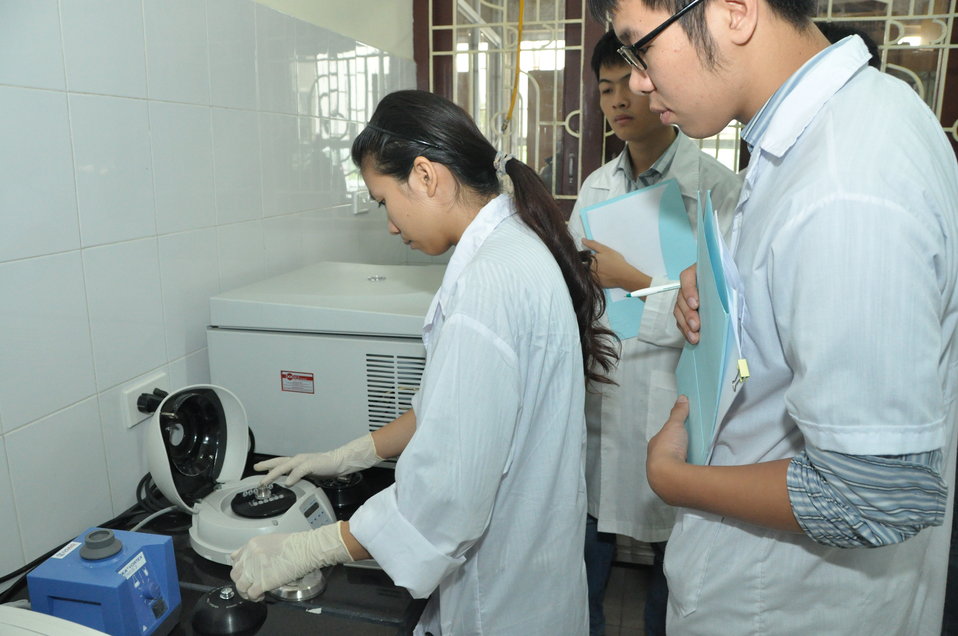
Animal virus detection lab training in Hanoi

Trainee learns how to detect viruses in Hanoi under a USAID program.